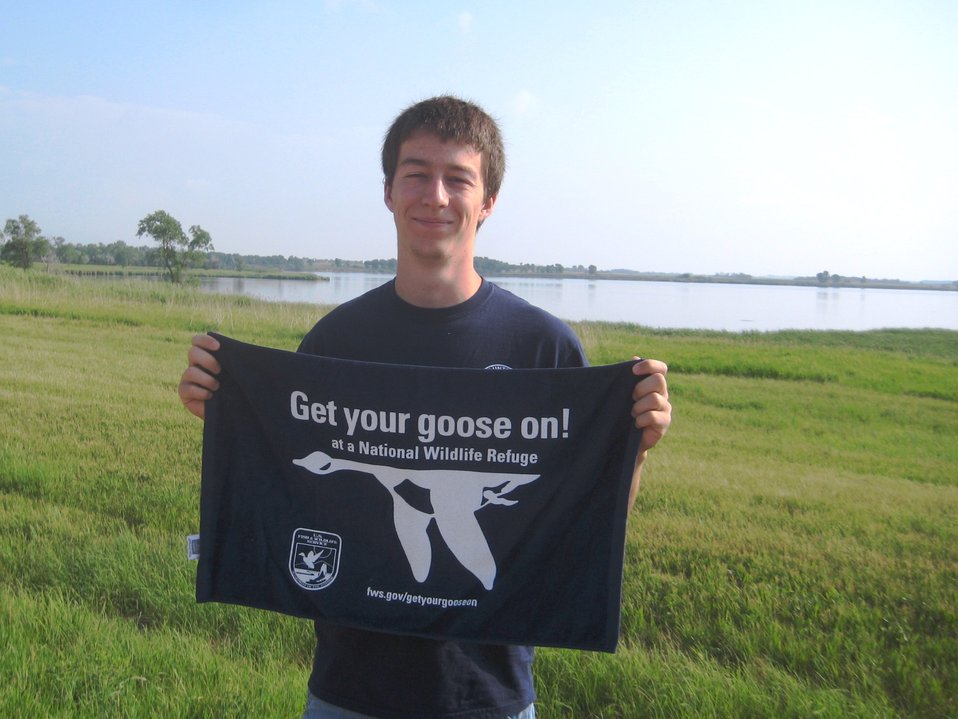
Get Your Goose On!

Taken at Tewaukon National Wildlife Refuge.